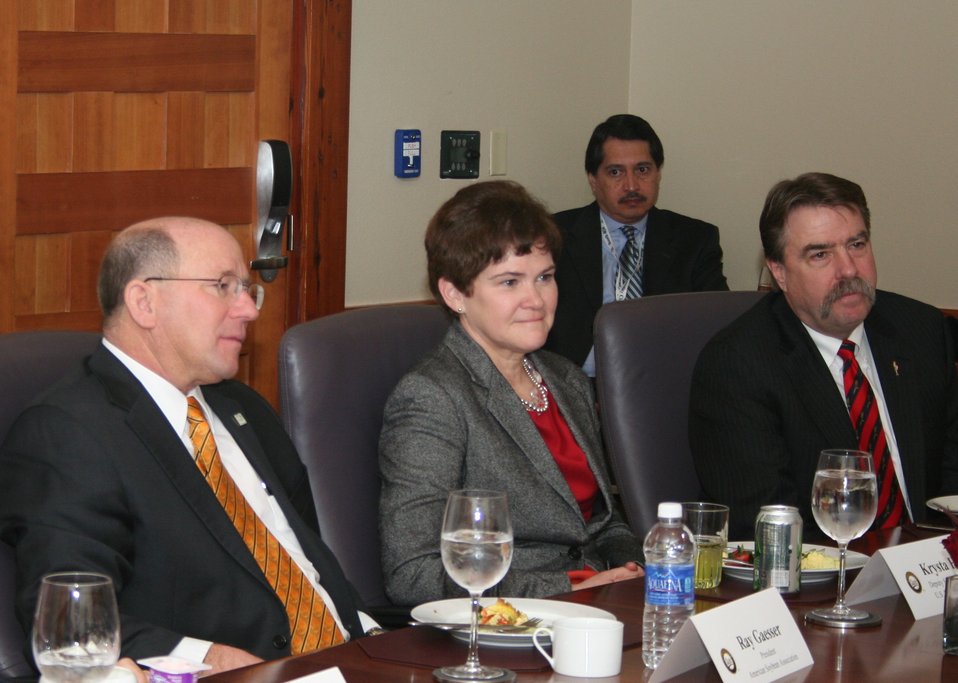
Agriculture Secretary Tom Vilsack and Agriculture Deputy Secretary Krysta Harden visit with presidents and CEOs of major commodity associations about the Farm Bill, trade, regulations and other topics prior to Secretary Vilsack’s keynote address at the Commodity Classic in San Antonio, TX on Friday, Feb. 28, 2014. (L to R American Soybean Association President Ray Gaesser, Agriculture Deputy Secretary Krysta Harden;
National Association of Wheat Growers President Bing Von Bergen).